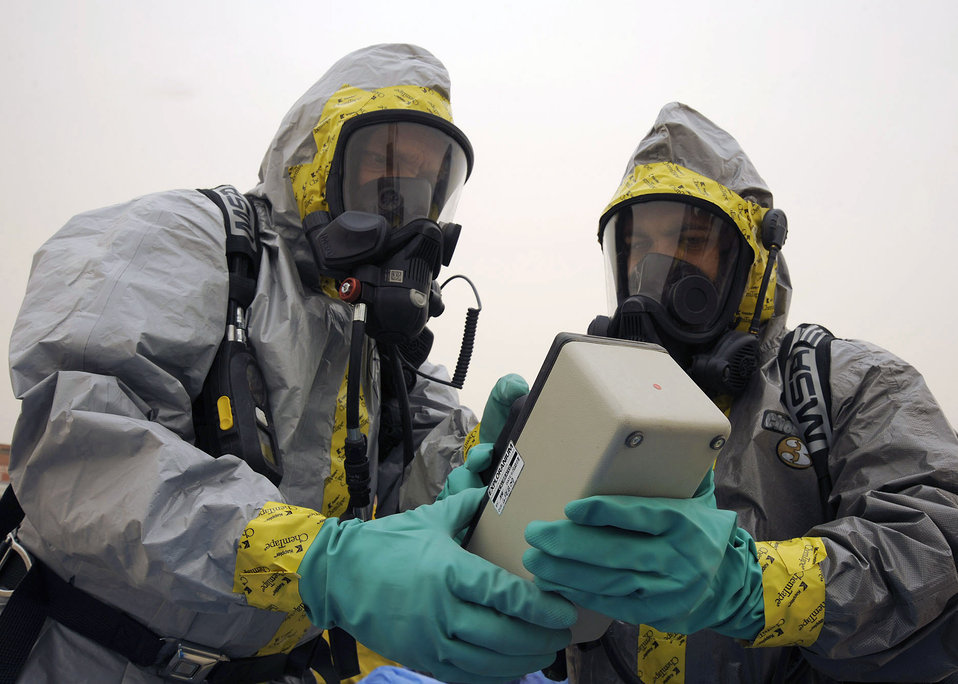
Inspecting the mail

Armed with chemical suits and hazardous material sensors, Tech. Sgt. Steve Gaunt and Senior Airman Tyrone Fisher inspect packages for contamination recently at Camp Stryker, Iraq. All mail that is improperly labeled, doesn't have a return address or gets lost in the system has to be inspected before it can be processed. The Iraqi government returns the mail to the Joint Military Mail Terminal, but necessary precautions are taken because the mail left the military postal system. Sergeant Gaunt is deployed from Alabama Air National Guard's 117th Air Refueling Wing. Airman Fisher is deployed from the Indiana Air National Guard's 181st Intelligence Wing. Both are assigned to the 447th Expeditionary Civil Engineer Squadron.